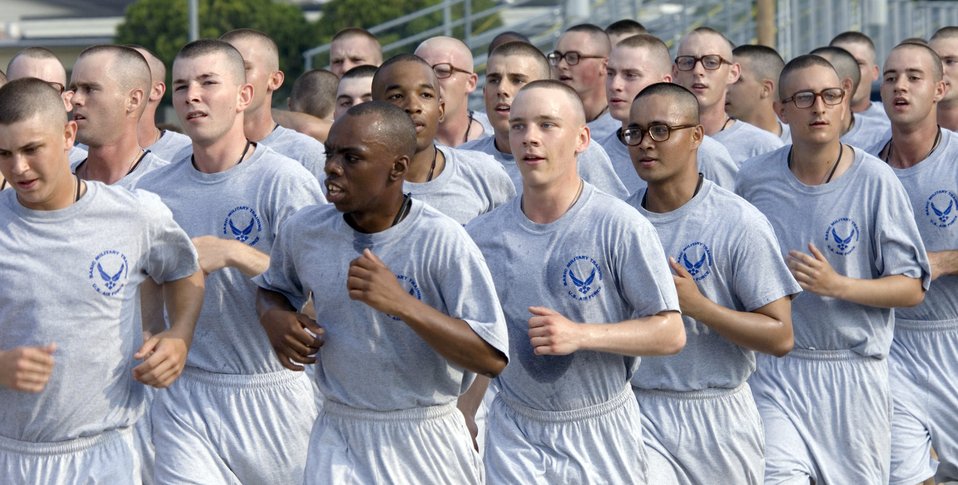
Airmen's Run

Airmen completing Air Force Basic Military Training at Lackland Air Force Base, Texas, participate in a 2.5-mile Airmen's run Thursday, June 29. The run is a victory celebration of the challenges overcome and esprit de corps gained by Airmen during training.